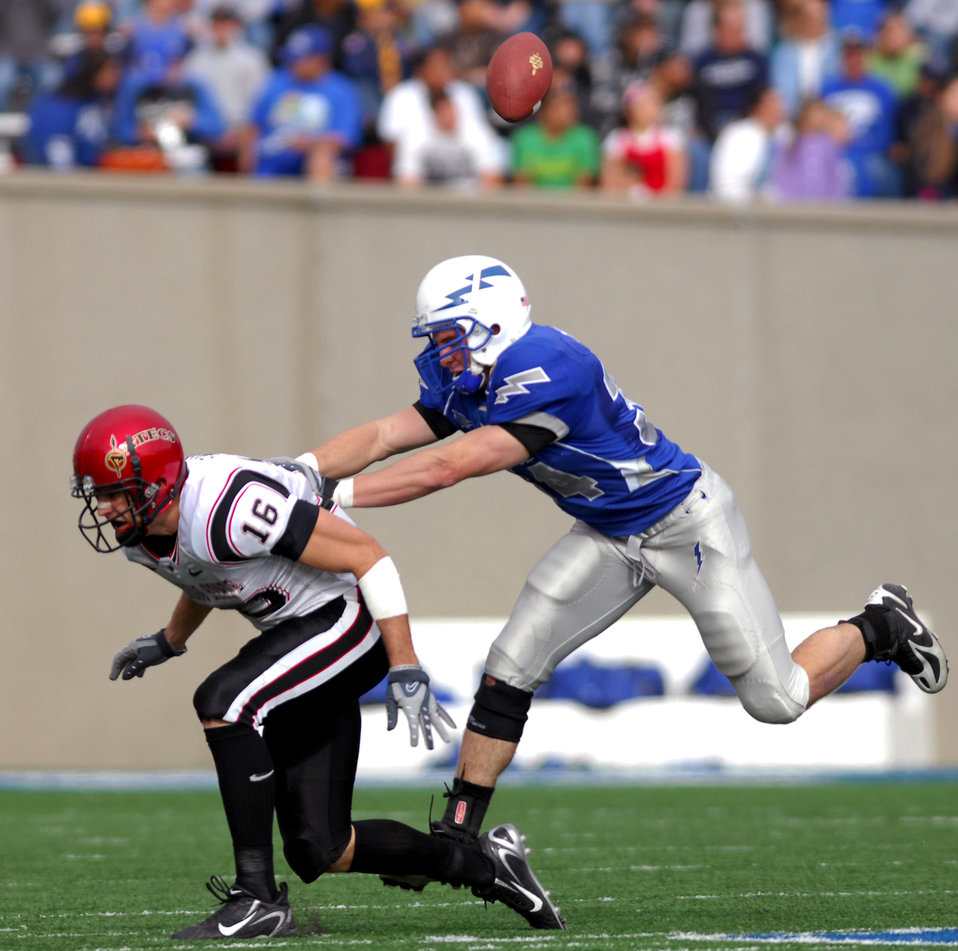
Football: Bowl-bound Falcons dominate regular season finale

Falcon strong safety Chris Thomas jars the ball from San Diego State wide receiver Brett Swain during Air Force's 55-23 win over the Aztecs Nov. 17 at the Academy's Falcon Stadium. Thomas led the bluesuiter defense with 13 tackles, including six solos.